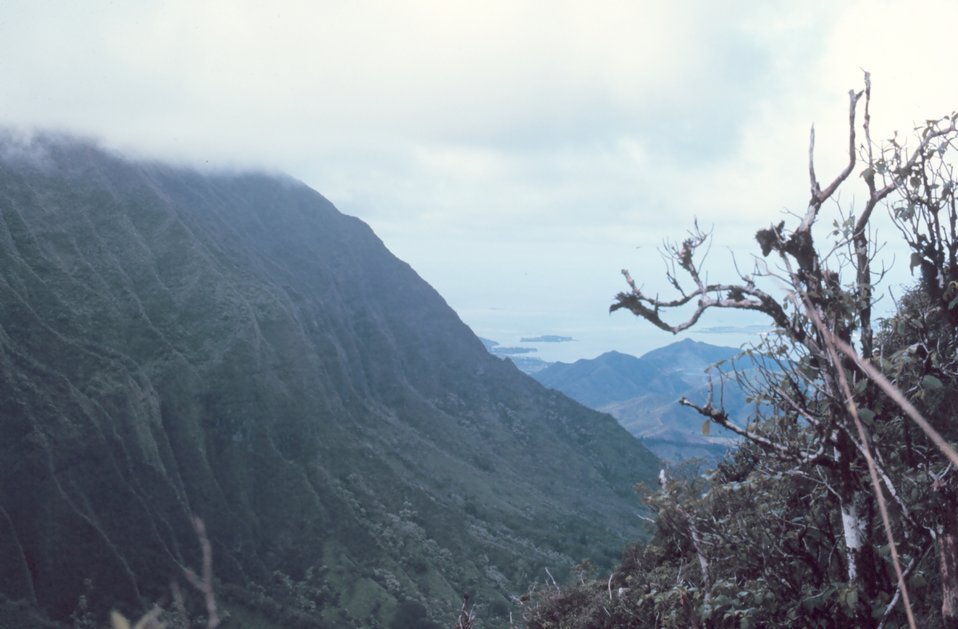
Looking down a rugged valley to the sea